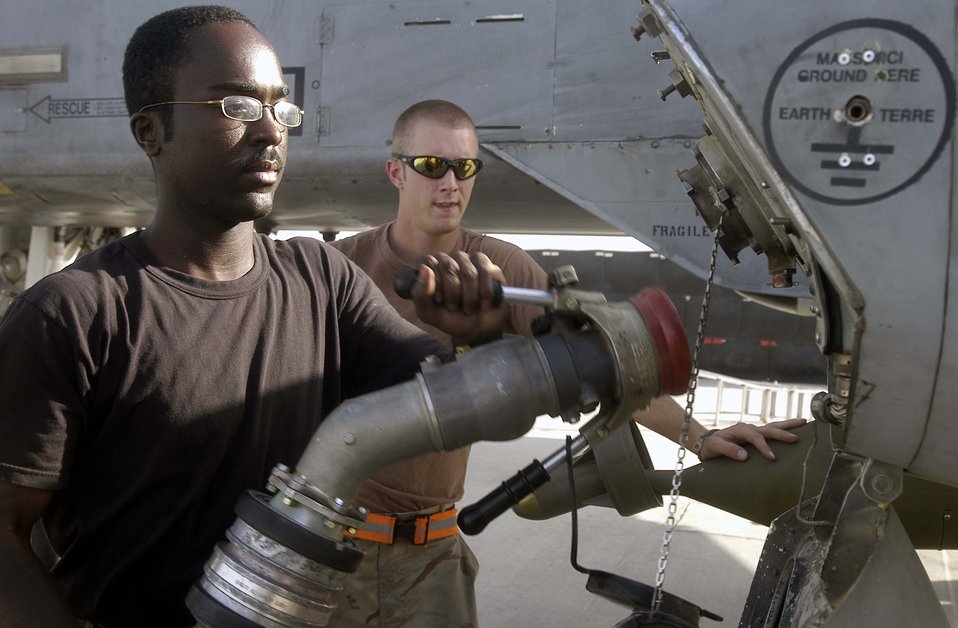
A million gallons and counting

Airman 1st Class Christopher Leach attaches a fuel hose from a tanker truck to an A-10 Thunderbolt II at Bagram Air Base, Afghanistan, on Aug. 5, as crew chief Airman 1st Class Perry Friend watches. Airman Leach has pumped more than 1 million gallons of jet fuel during his four-month air expeditionary force rotation. The 455th Expeditionary Logistics Readiness Squadron Petroleum, Lubricants and Oil Flight has delivered almost 6.6 million gallons of fuel to military and civilian aircraft at Bagram since early May. Airman Leach, deployed from Dover Air Force Base, Del.